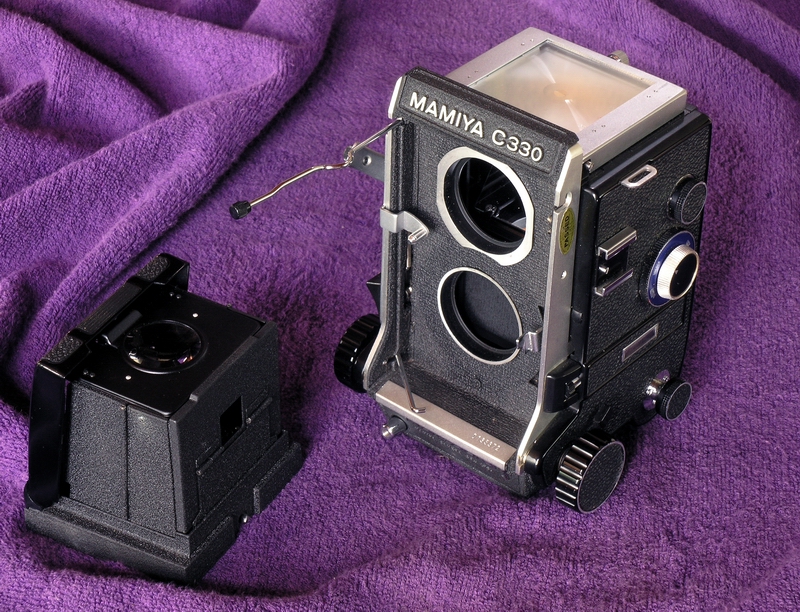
DANYvanvee